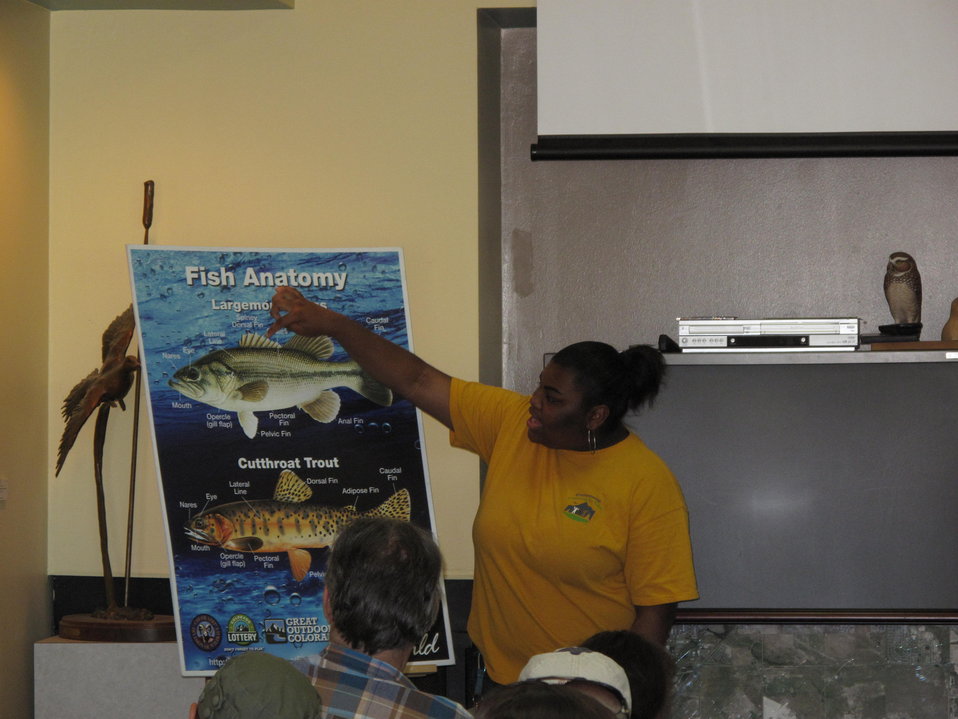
Learning Fish Anatomy

The older ELK kids teaching the younger ones the anatomy of a fish and the proper way to hold them.